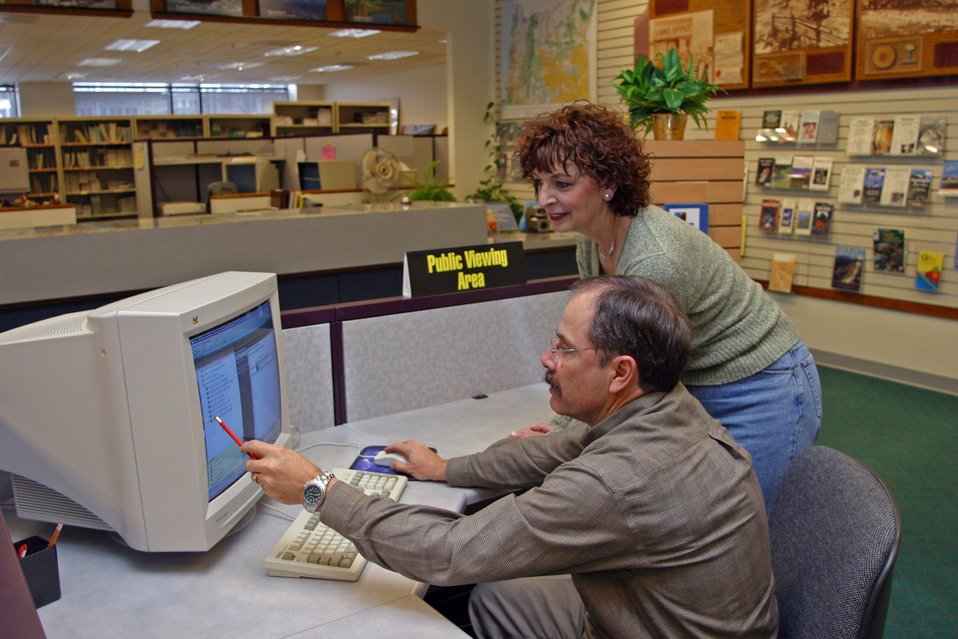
BLM's Land Office provides information about land status, minerals, maps, and general information to the public.